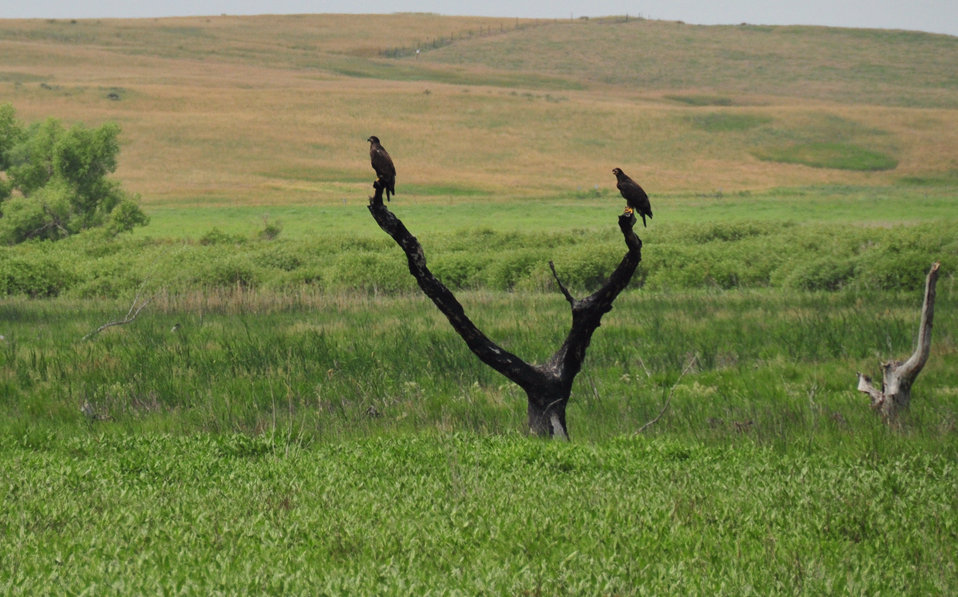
Bald Eagle Fledglings Lacreek NWR 2

Pair of bald eagle fledglings resting after their first flight from the nest. Lacreek NWR.